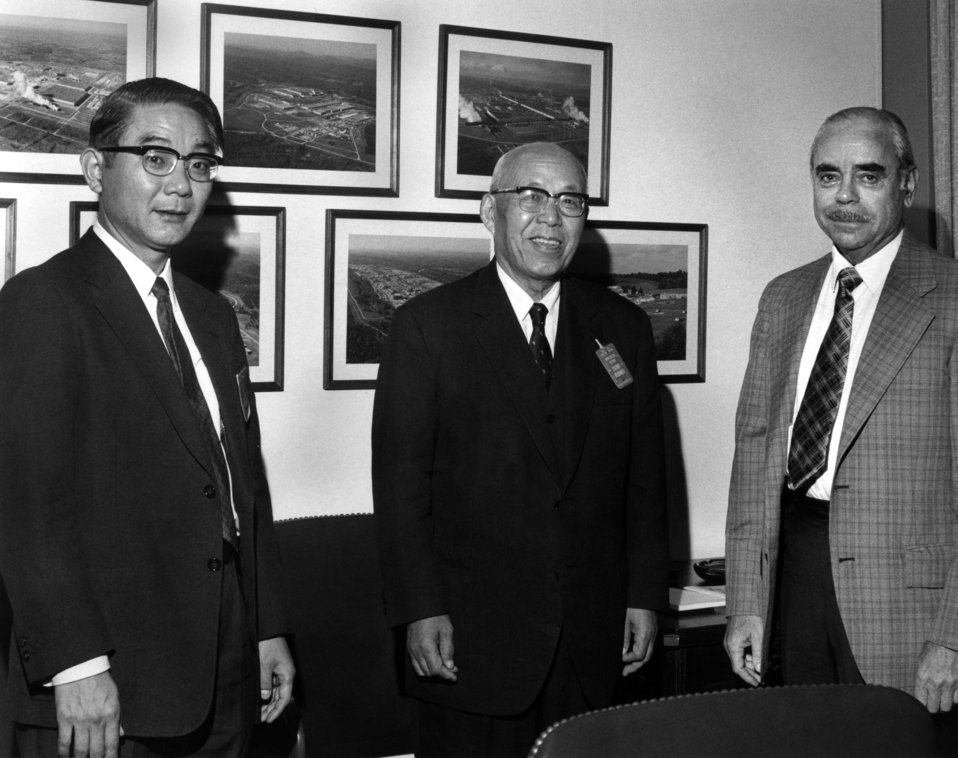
Japan Atomic Power Co. Tour with AEC Manager Sam Sapirie Oak Ridge

71-234-8 DOE photo Frank Hoffman 9-1971 Oak Ridge Tennessee